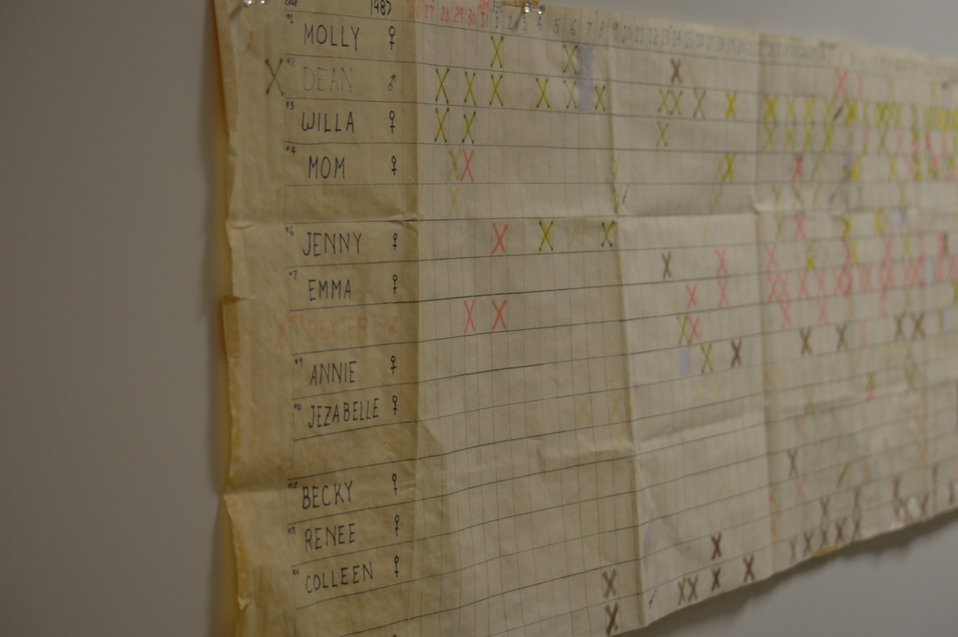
Interns visit the NBFFCC

In the summer of 2012, USFWS Region 6 interns visited the National Black-footed Ferret Conservation Center (NBFFCC) in Colorado to learn how the program reintroduces the endangered Black-footed ferret back into its native habitat.